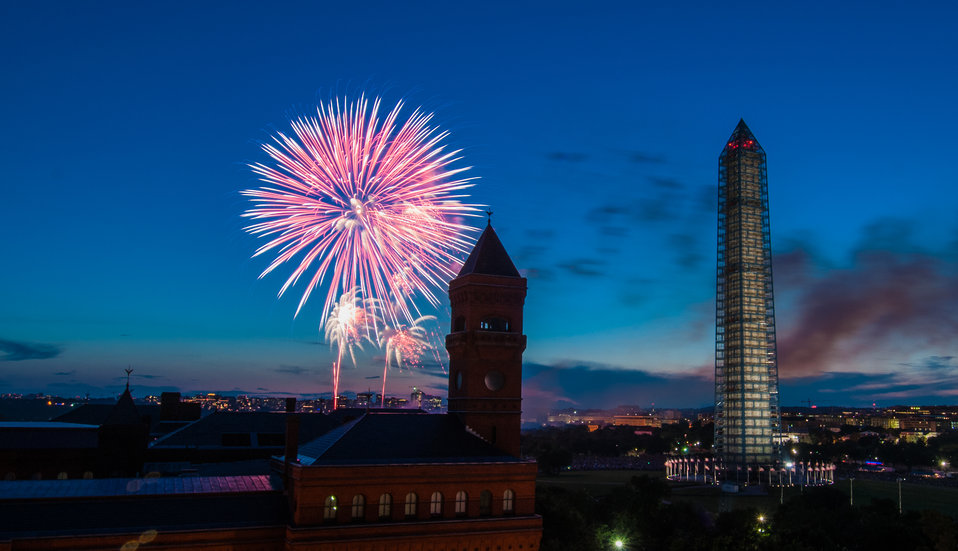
4th of July fireworks as seen from the U.S. Department of Agriculture (USDA) headquarters building, with the USDA Forest Service Yates Building in the foreground, left, and the Washington Monument in Washington, D.C., on July 4, 2013.